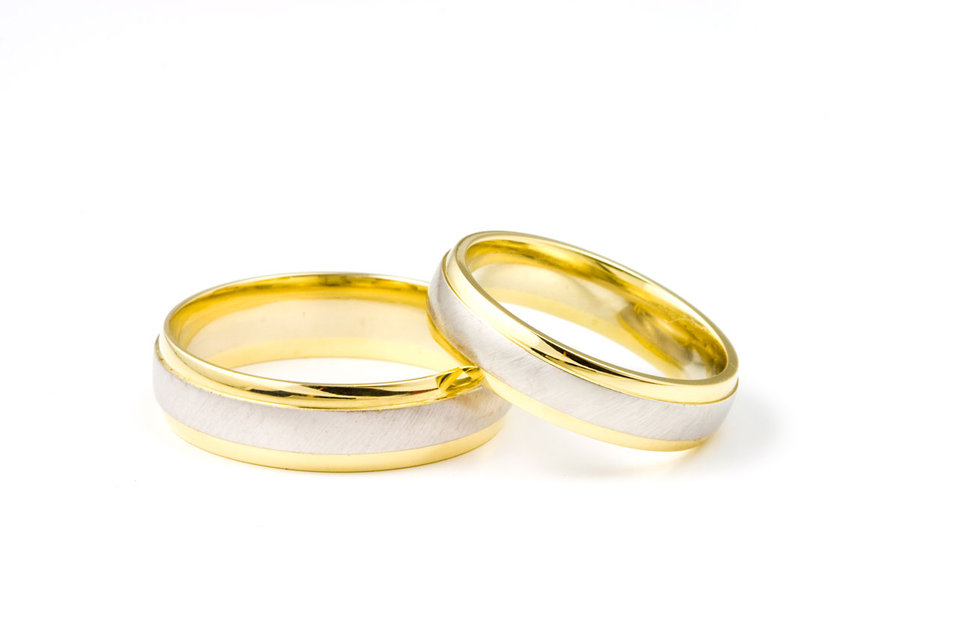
Wedding rings

Golden wedding rings on white background.